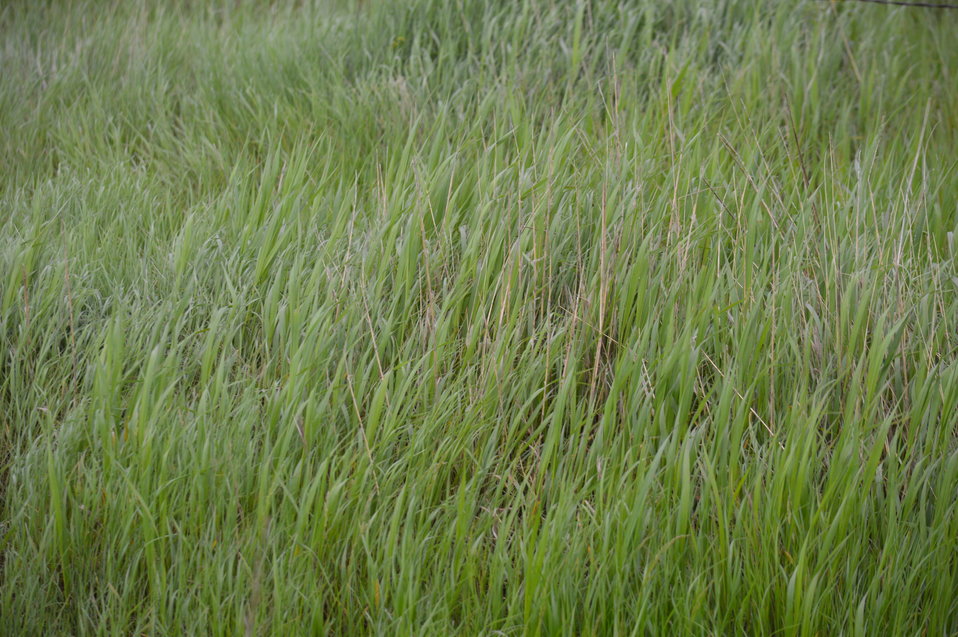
Close-up of Prairie

Scenery and wildlife at Lake Ilo National Wildlife Refuge in North Dakota